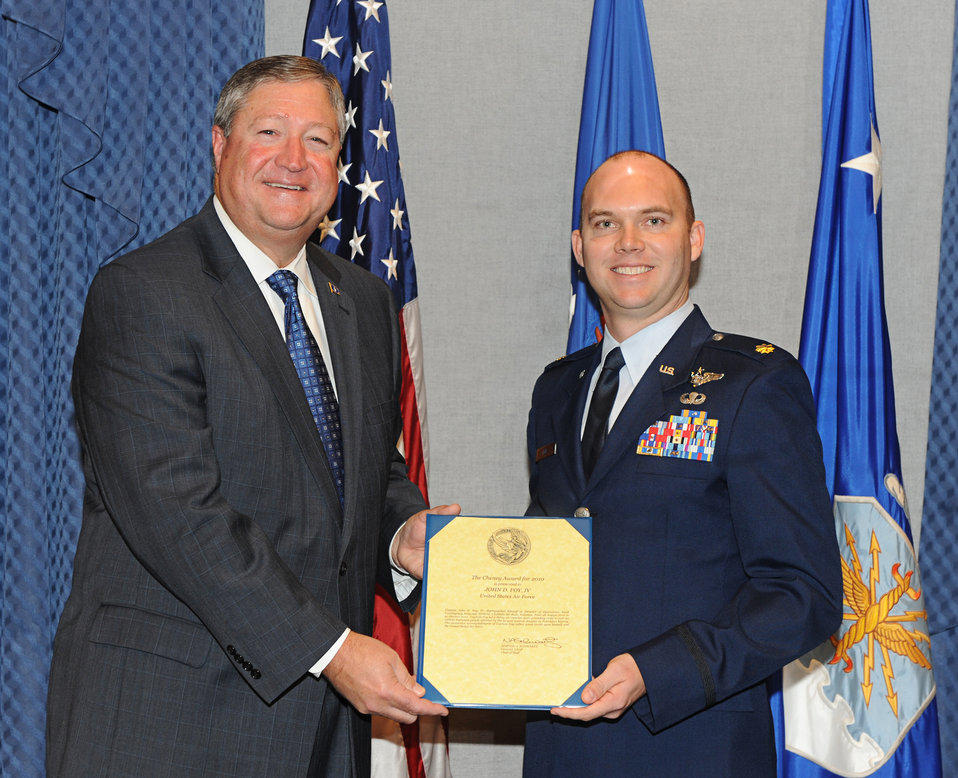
Cheney Award

Secretary of the Air Force Michael Donley presents the Lt. William
Cheney Award to Maj. John D. Foy IV during a ceremony at the Pentagon Oct.
27, 2011.